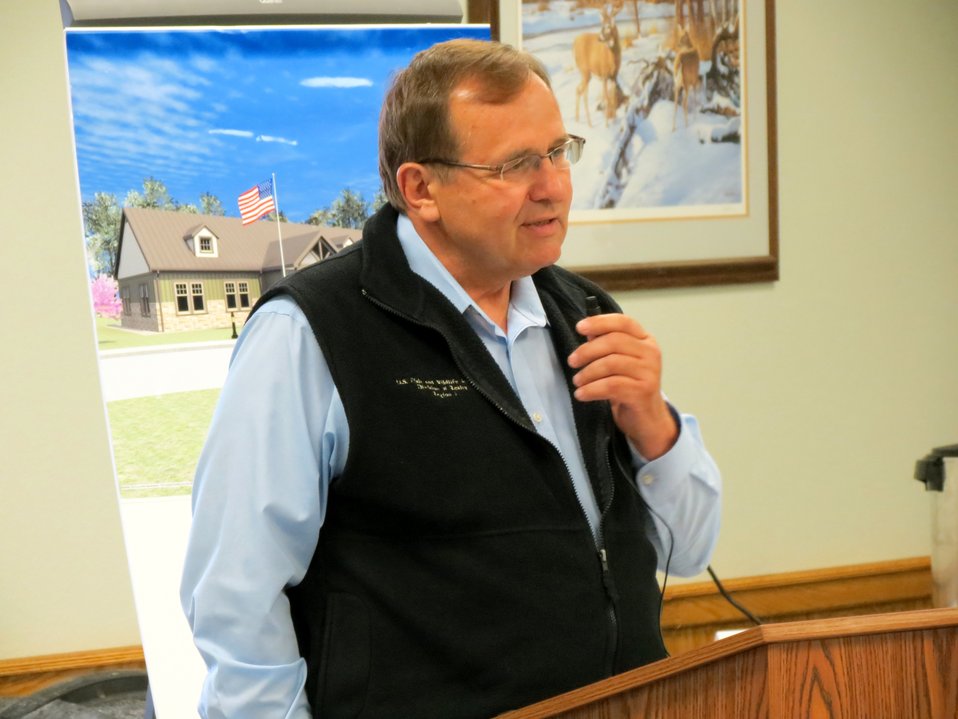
Rick Schultz

Midwest Region Chief of Refuges Rick Schultz, explains the importance of partnerships and refuge involvement in the community.